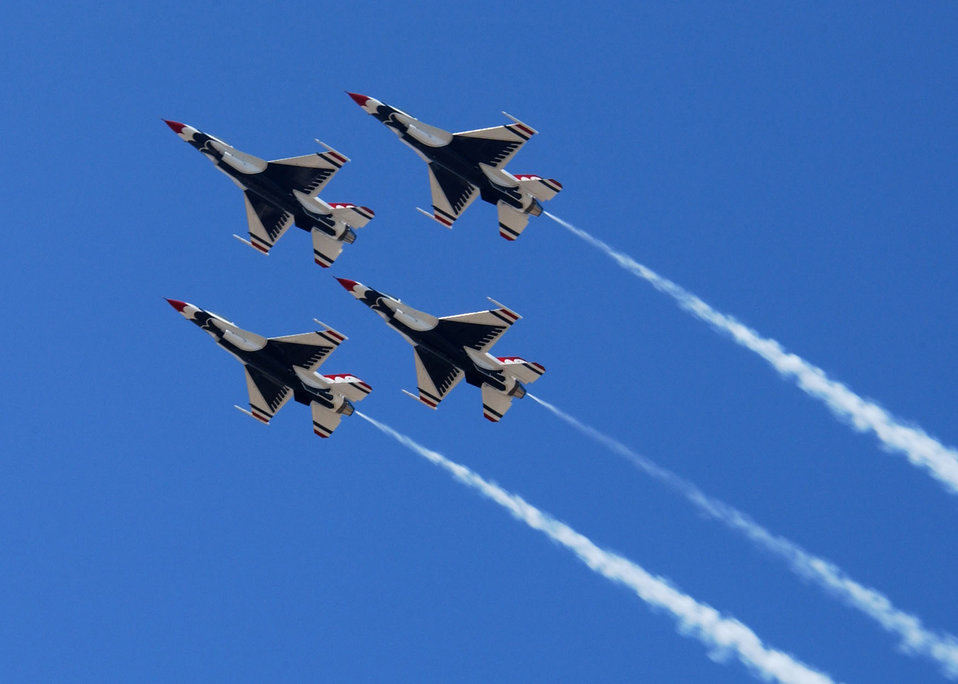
Thunderbirds in the sky

OVER ELLSWORTH AIR FORCE BASE, S.D. - The U.S. Air Force Demonstration Team